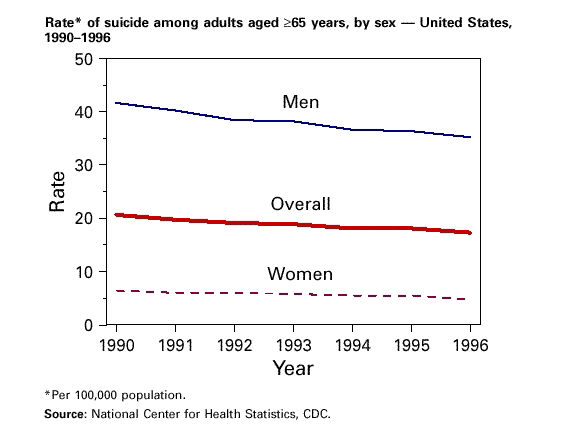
Rate of suicide among adults aged 65 years and older, by sex.